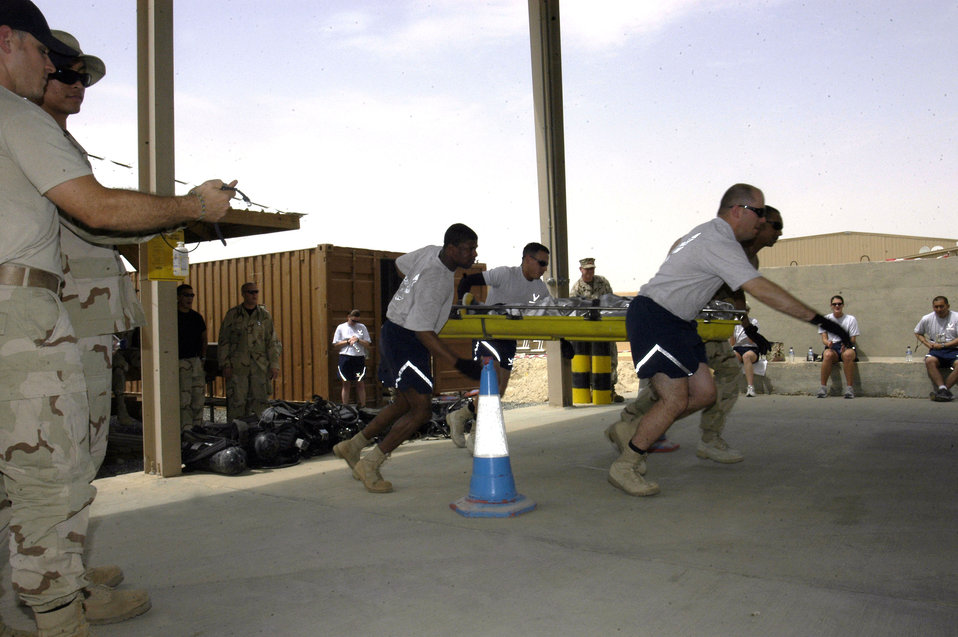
Firefighter Challenge

The 386th Expeditionary Services Squadron team gets a running start on the obstacle course during the Firefighter Challenge in Southwest Asia on Thursday, May 4, 2006. More than 36 Airmen, Marines and Soldiers participated in the event, which was hosted by the 386th Air Expeditionary Wing fire and emergency services flight. Individual and team events included climbing a 40-foot tower to hoist a 40-pound hose and pulling a hose 75 feet, which when extended weighs more than 270 pounds.